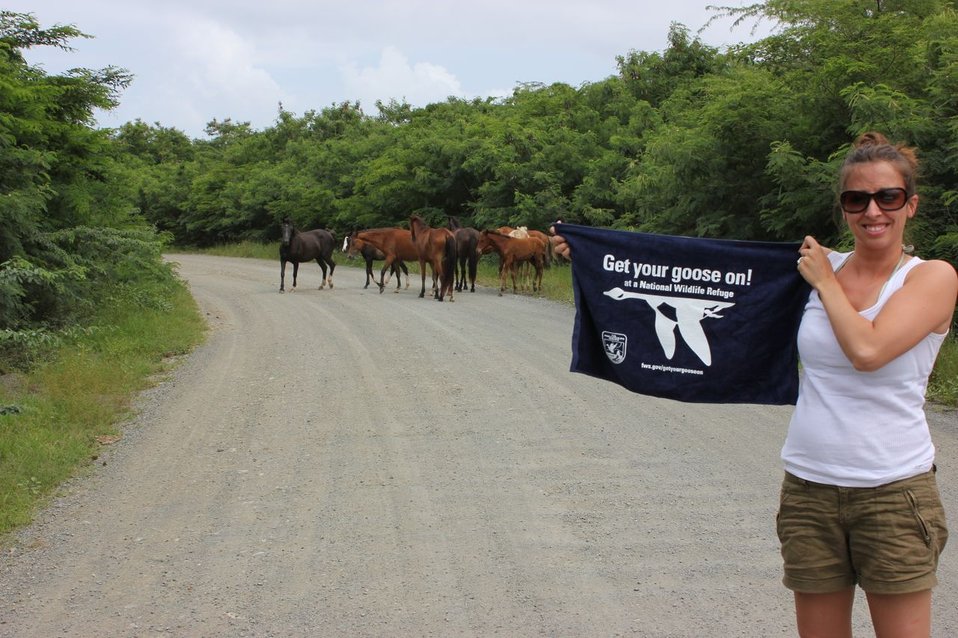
Wild Horses on Vieques National Wildlife Refuge

Land is scarce in the islands, so residents of Vieques, Puerto Rico, allow their horses to free range much of the year. As a result, many 'wild' horse viewing opportunities exist across Vieques NWR.